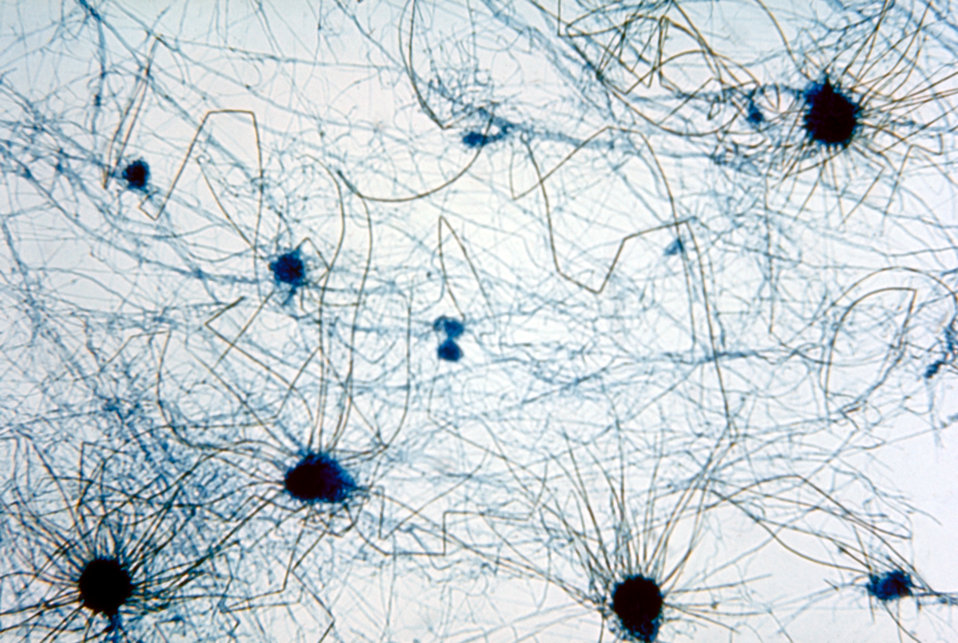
This photomicrograph reveals multiple perithecia, or fruiting bodies, of a Chaetomium spp. fungus.